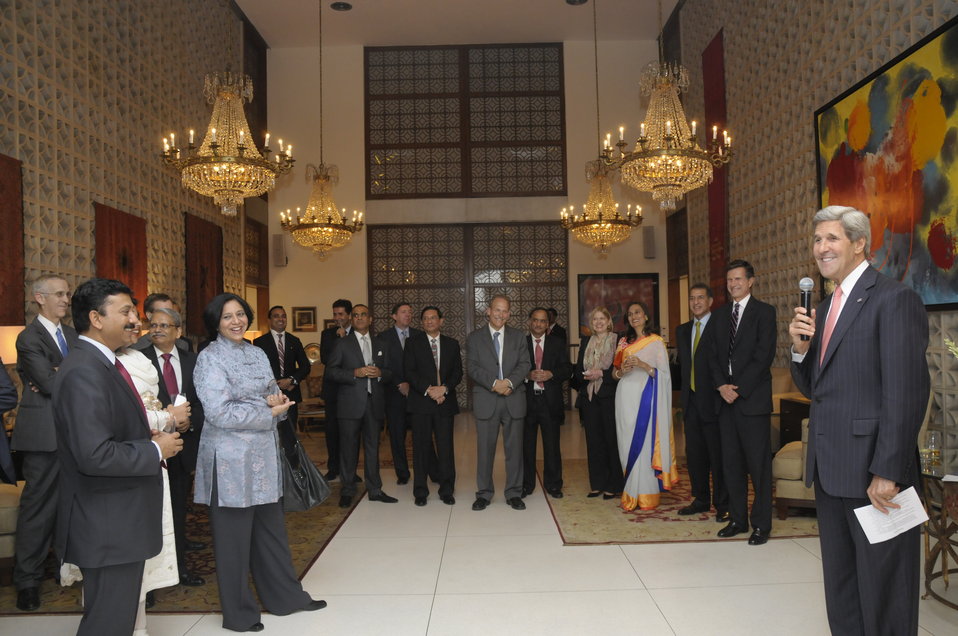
Secretary Kerry Addresses Guests at a Business Leaders Dinner

U.S. Secretary of State John Kerry addresses guests at a business leaders dinner at the Roosevelt House, the residence of the U.S. Ambassador, in New Delhi, India on June 23, 2013.